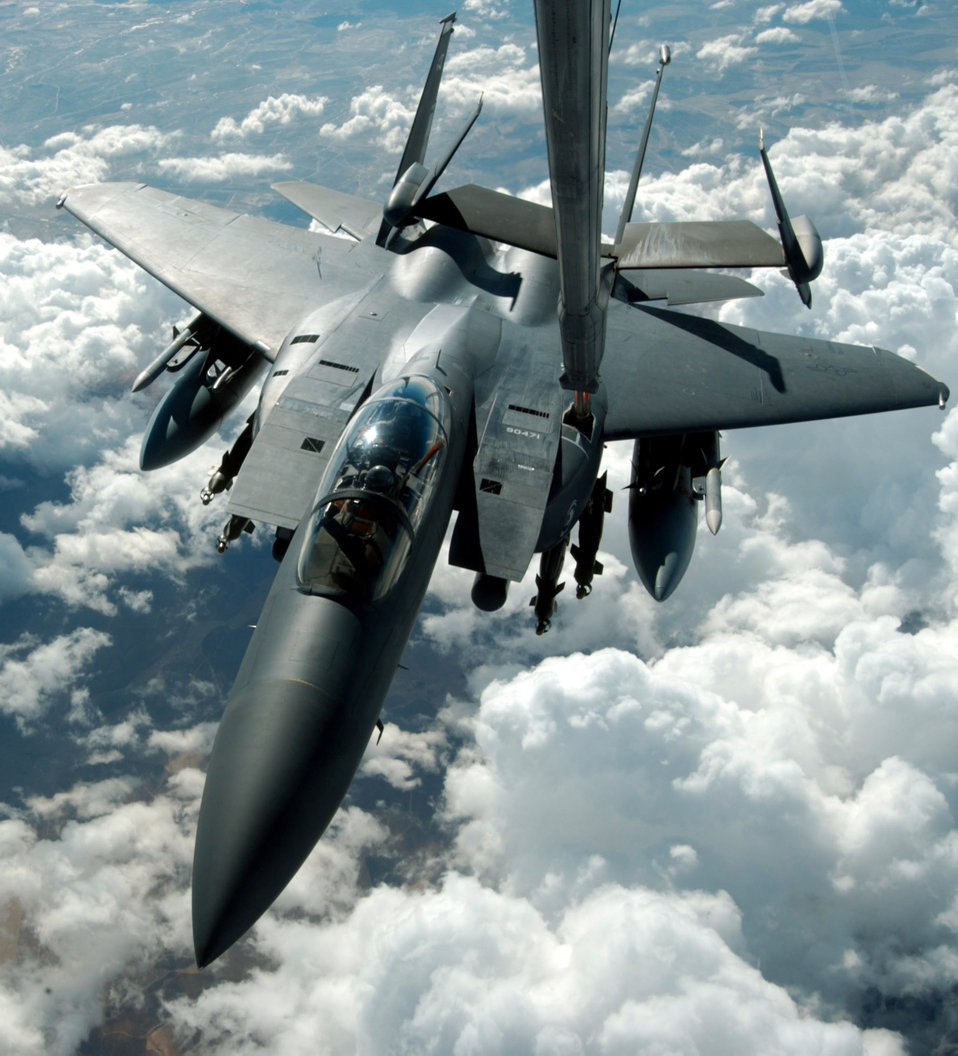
F-15E Strike Eagle refuels

An F-15E Strike Eagle receives fuel from a 908th Expeditionary Air Refueling Squadron KC-10 Extender during a mission over Iraq in 2004.